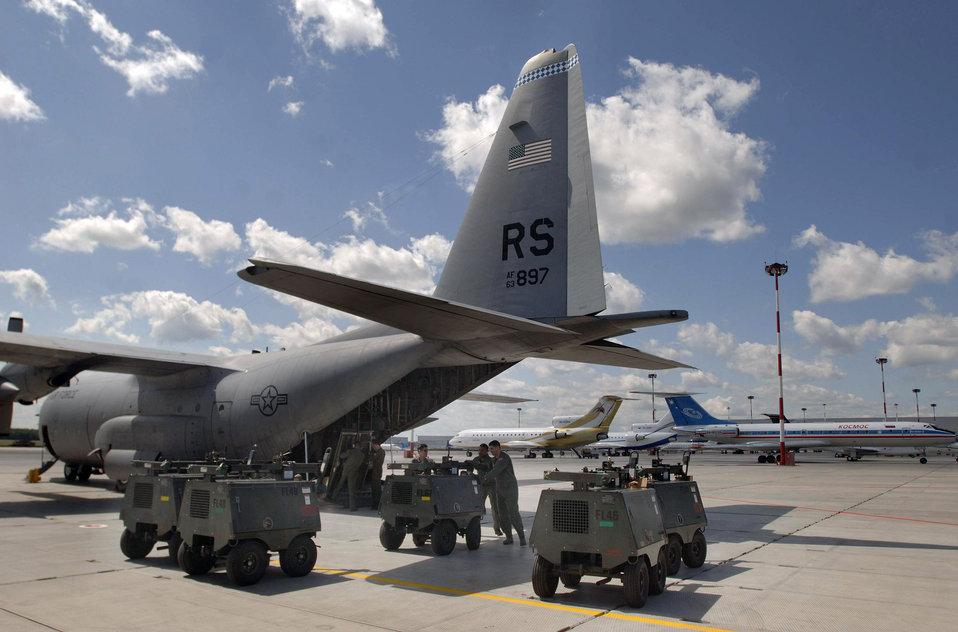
Airmen provide presidential support in Moscow

Portable light carts are unloaded onto the tarmac from one of two C-130 Hercules July 3 at Moscow's Vnukovo International Airport in Russia. The C-130s are from the 37th Airlift Squadron from Ramstein Air Base, Germany. The C-130 aircrews delivered equipment in preparation for President Barack Obama's visit to Moscow.